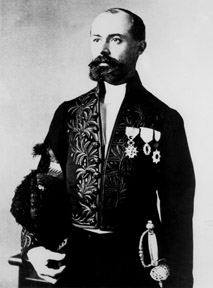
Antoine Henri Becquerel.